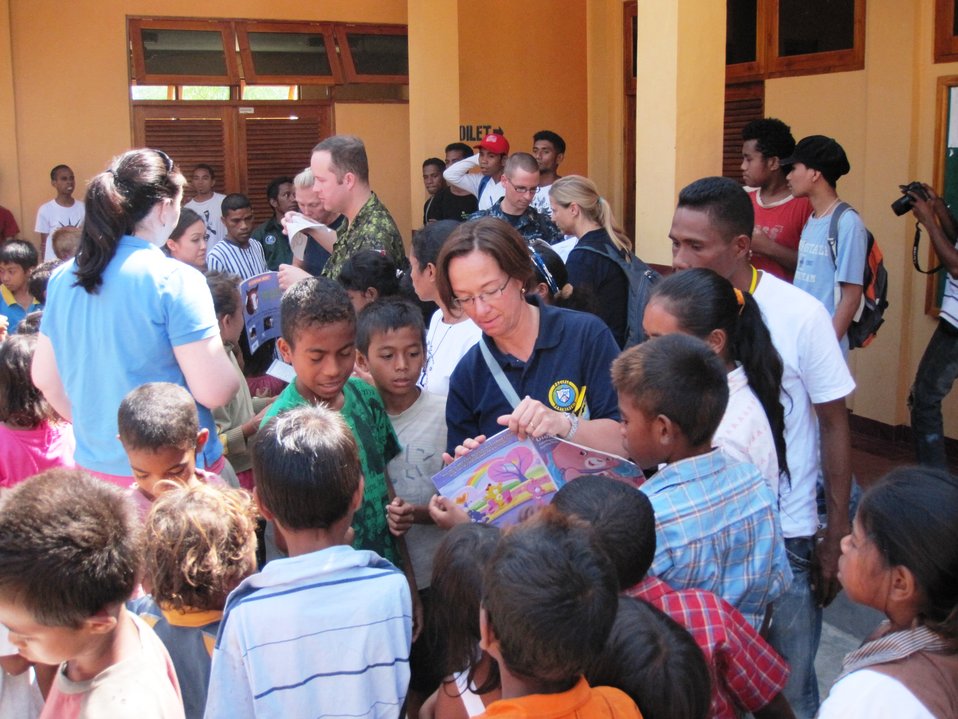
PP2010 Commodore Capt. Franchetti Hands Out Coloring Book Pages

Pacific Partnership 2010 Commodore Capt. Lisa Franchetti hands out coloring book pages to children at an orphanage in Dili, Timor-Leste, on August 20, 2010.